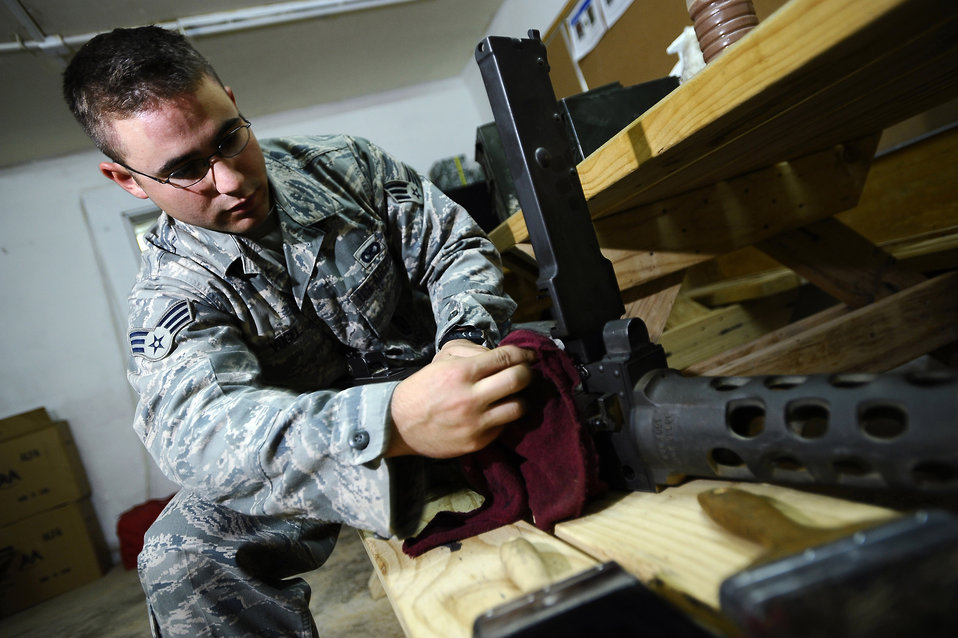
Light 'em up

Senior Airman Kevin Vogel cleans a M2 .50-caliber machine gun Nov. 15 at Joint Base Balad, Iraq. The weapon requires weekly cleaning to keep it dust free and operating correctly. Airman Vogel is a security forces patroller with the 532nd Expeditionary Security Forces Squadron deployed from Lackland Air Force Base, Texas. His hometown is St. Charles, Mo.